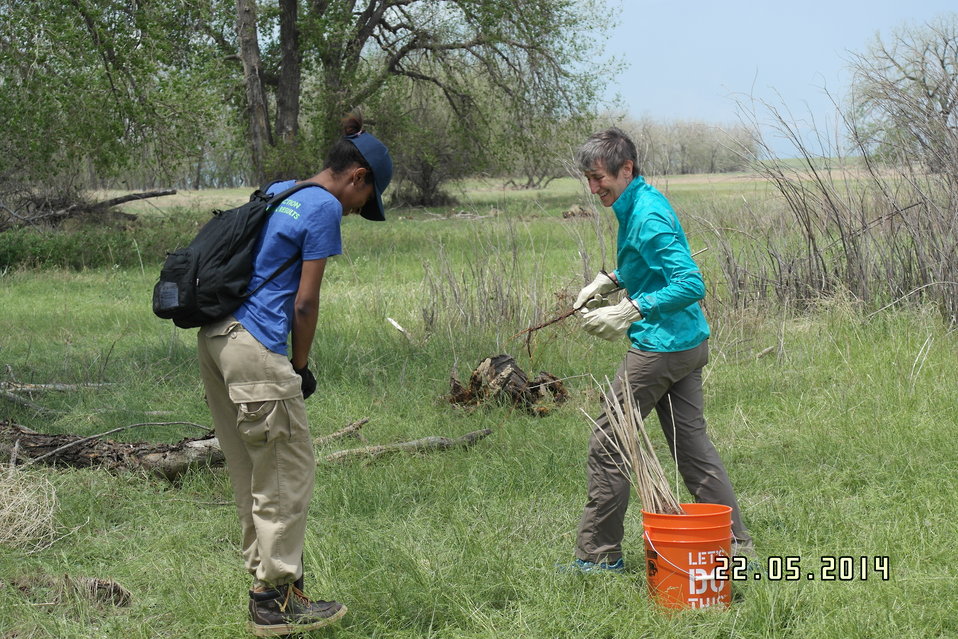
Secretary Jewell Announces $6.7 for Youth Conservation Job

Interior Secretary Sally Jewell helps local youth conservation groups plant cottonwood trees at Rocky Mountain Arsenal National Wildlife Refuge.